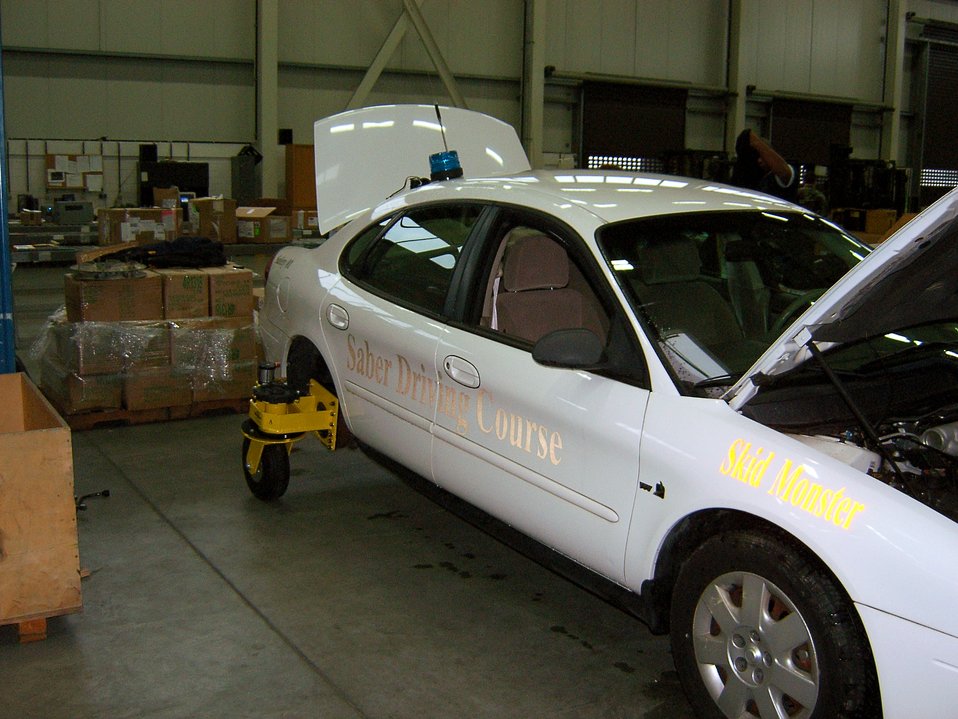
Spangdahlem driver course teaches Airmen to keep control

The government vehicle, Saber 2, is shown with the new Skid Monster Driving System installed. The car is one of two that the 52nd Fighter Wing Safety Office uses as part the new driving course at Spangdahlem Air Base, Germany.